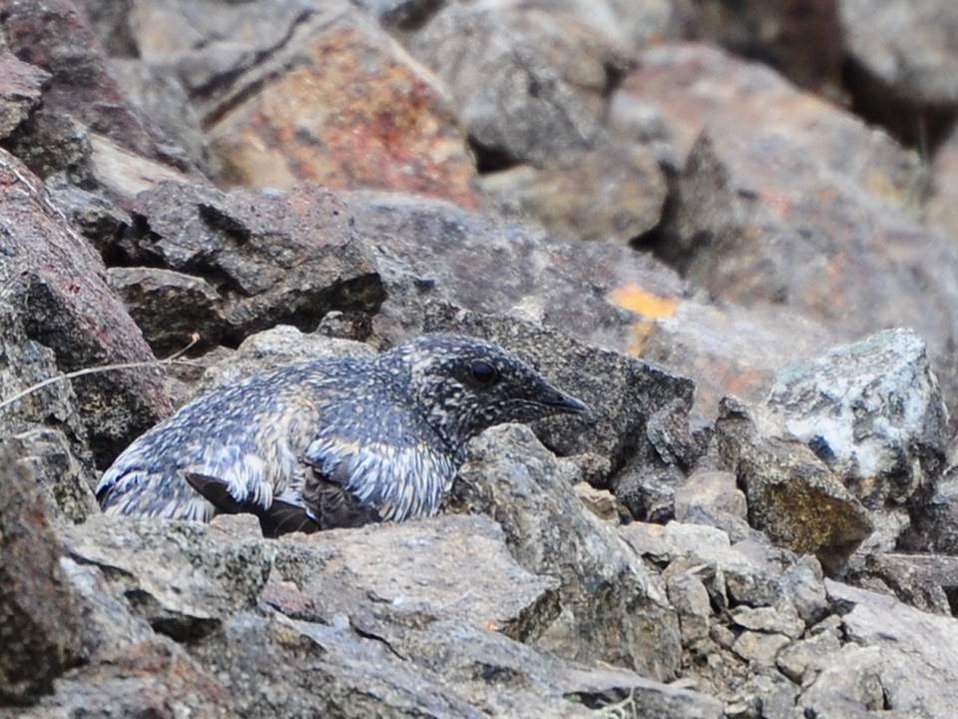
2013 Kodiak-Volunteer(02) 0764 small

'Adult Kittlitz's murrelet incubating an egg in late July. - Photo Credit: USFWS 2013 KIMU Crew
Adult Kittlitz's murrelet incubating an egg in late July. - Photo Credit: USFWS 2013 KIMU Crew'